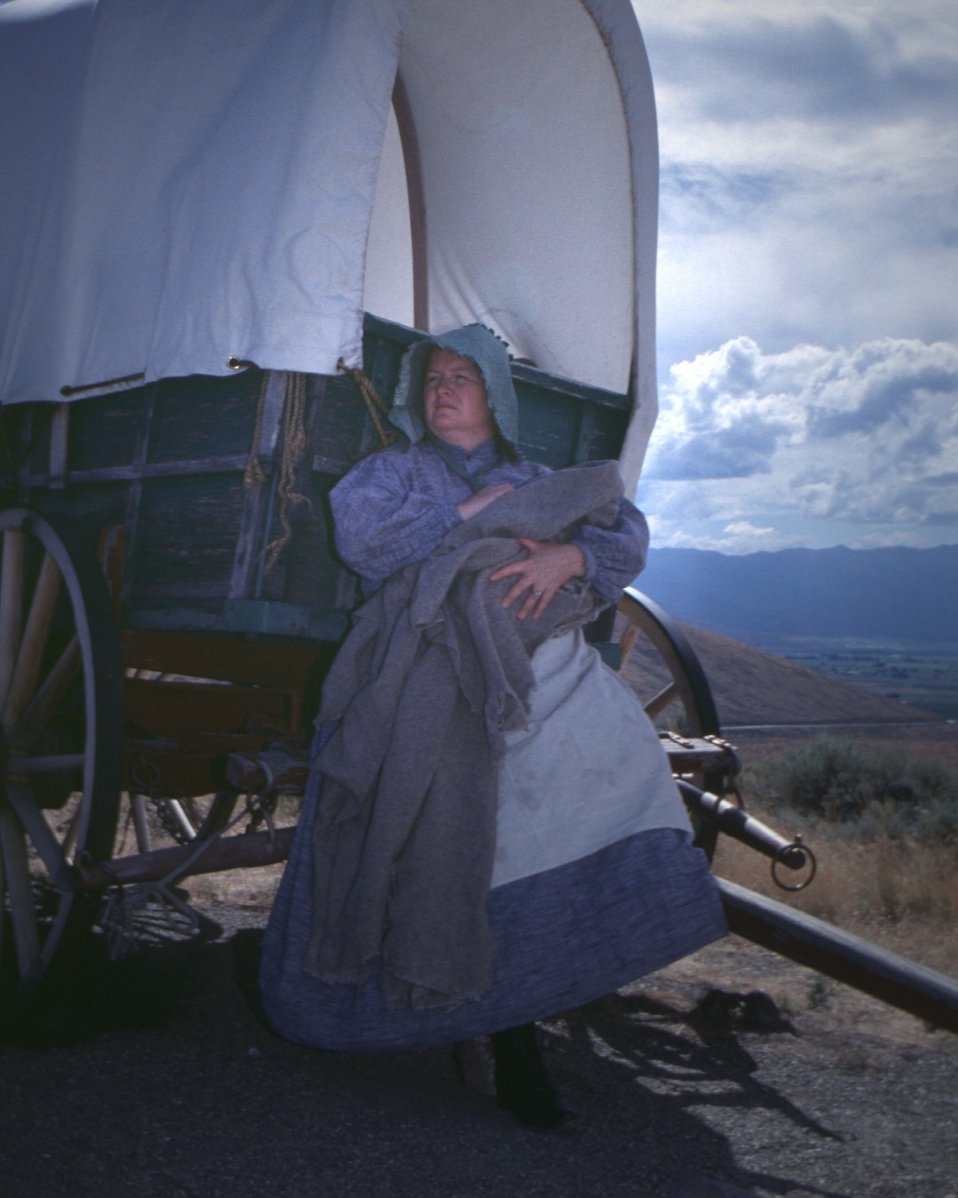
Nancy Harms portrays a pioneer woman holding a swaddled child.